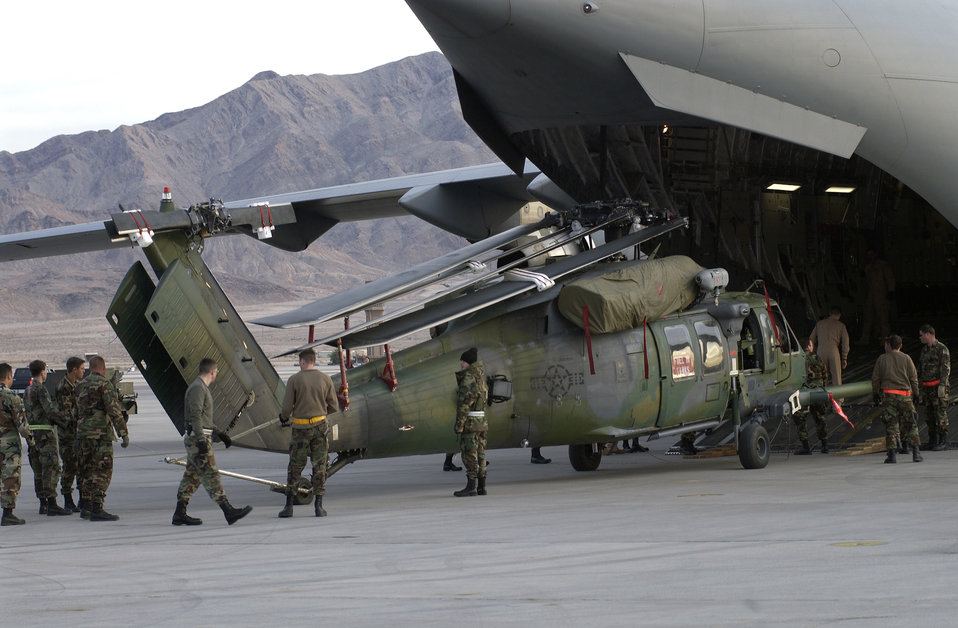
Tight fit

NELLIS AIR FORCE BASE, Nev. -- Airmen with the 757th Aircraft Maintenance Squadron here load an HH-60 Pave Hawk helicopter aboard a C-17 Globemaster III for transport to a forward-deployed location.